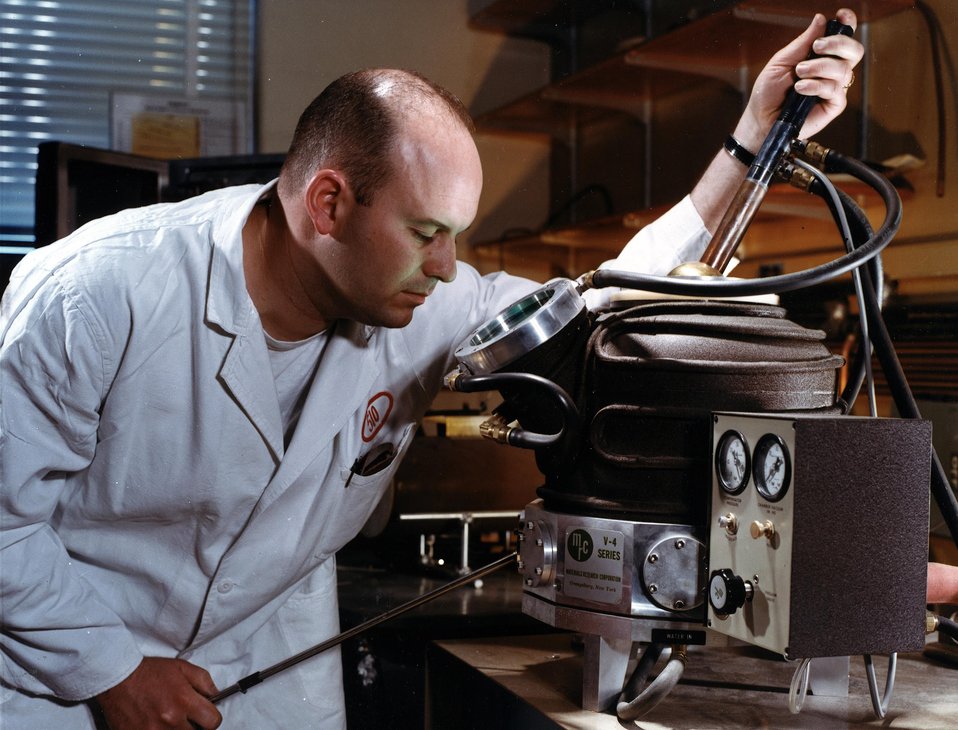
The arc furnace. c. 1967